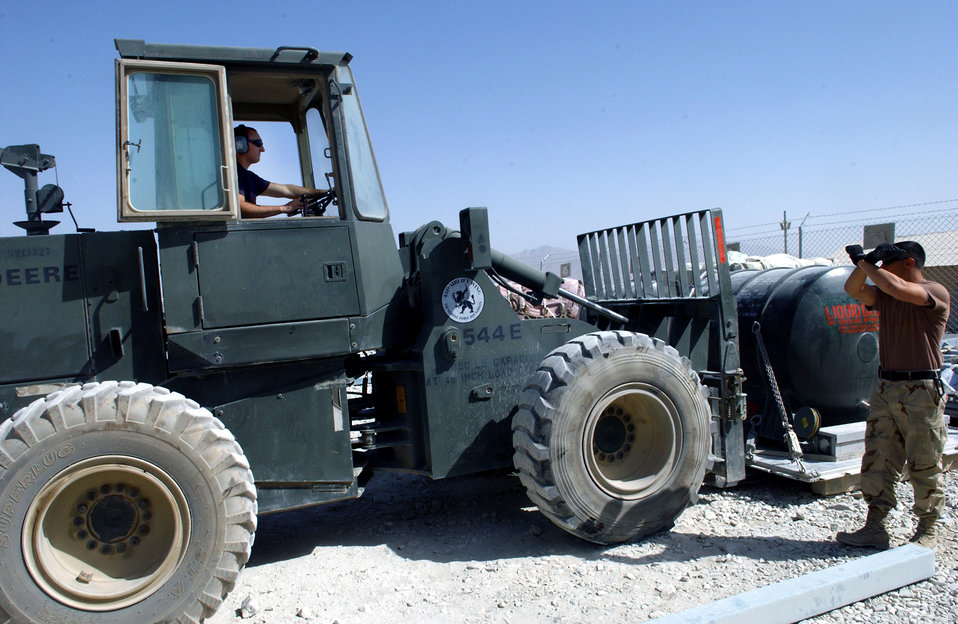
TMO packs it, tracks it

BAGRAM AIR BASE, Afghanistan -- Senior Airman Michael Spera (in forklift) moves a liquid-oxygen storage tank from the traffic management office storage area to a holding area, while Senior Airman Timothy Grasso guides him. They are assigned to the 455th Expeditionary Logistics Readiness Squadron here. Airman Spera is from Minot Air Force Base, N.D., and Airman Grasso is from Yokota Air Base, Japan.